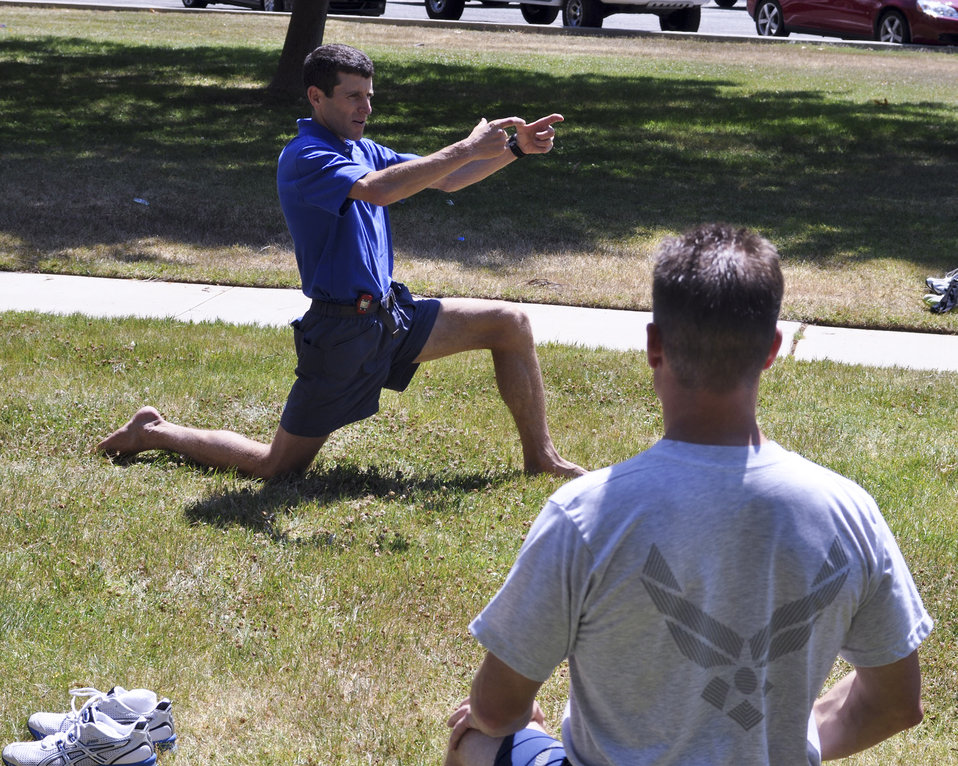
March FITT running program

Dr. Mark Cucuzzella demonstrates running forms during a clinic June 12, 2011, at March Air Reserve Base, Calif. The clinic was a joint effort between the 452nd Air Mobility Wing and the March Fitnesss and Inspiration Through Teamwork organization. Dr. Cucuzella is the chief medical consultant for the Air Force Marathon and the 2006 Air Force Marathon winner.